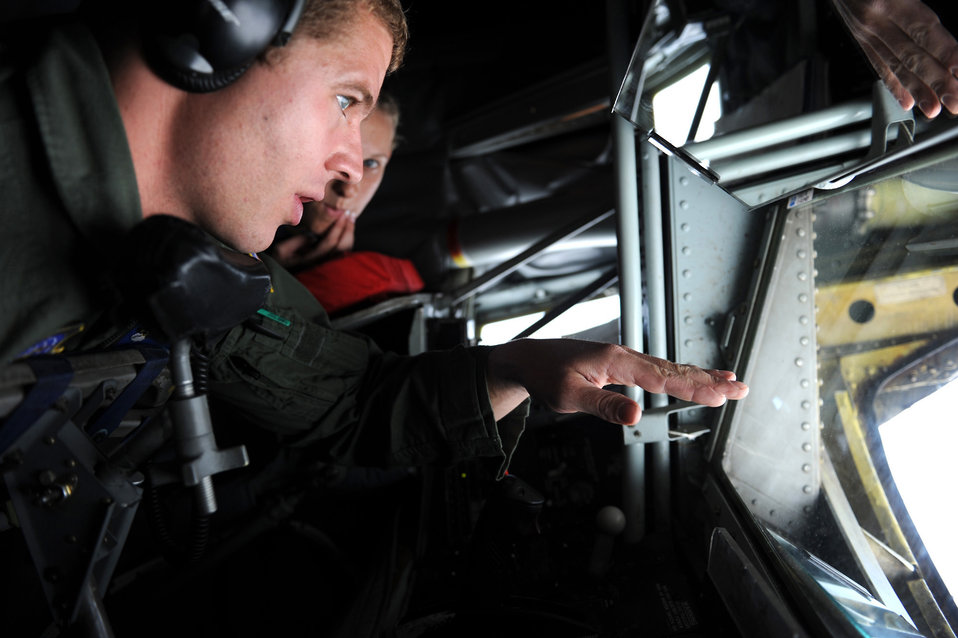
KC-135 Stratotanker refueling mission

Staff Sgt. Patrick Martin explains air refueling to Kaitlin Eskut on a KC-135 Stratotanker during a training mission April 21, 2010, at McConnell Air Force Base, Kan. Sergeant Martin is a boom operator assigned to the 344th Air Refueling Squadron. Miss Eskut is an Air Force JROTC cadet at Lyons High School in Lyons, Kans. who received an incentive flight.